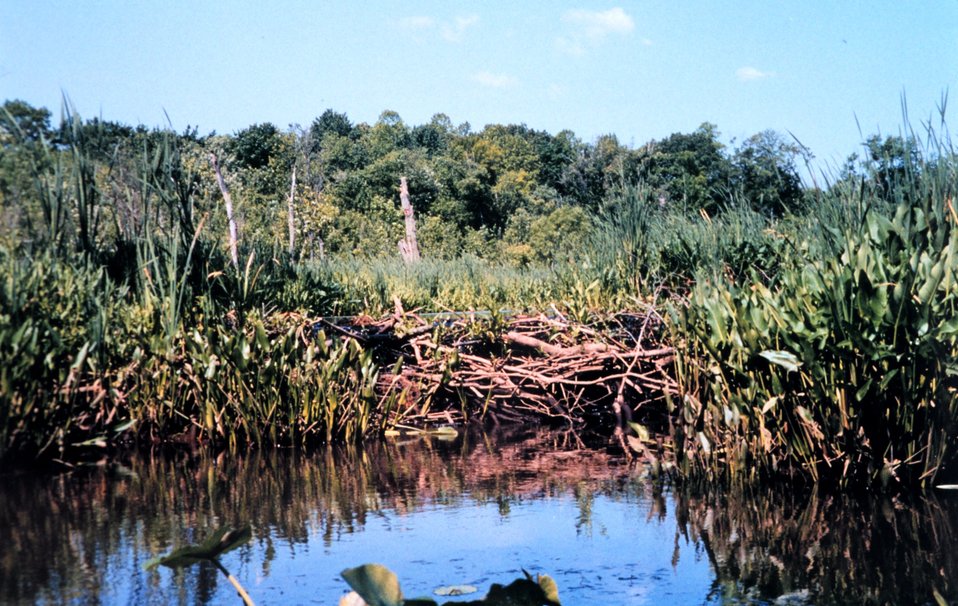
Pickerel weed growing in front of beaver dam at the head of Black Swamp Creek.